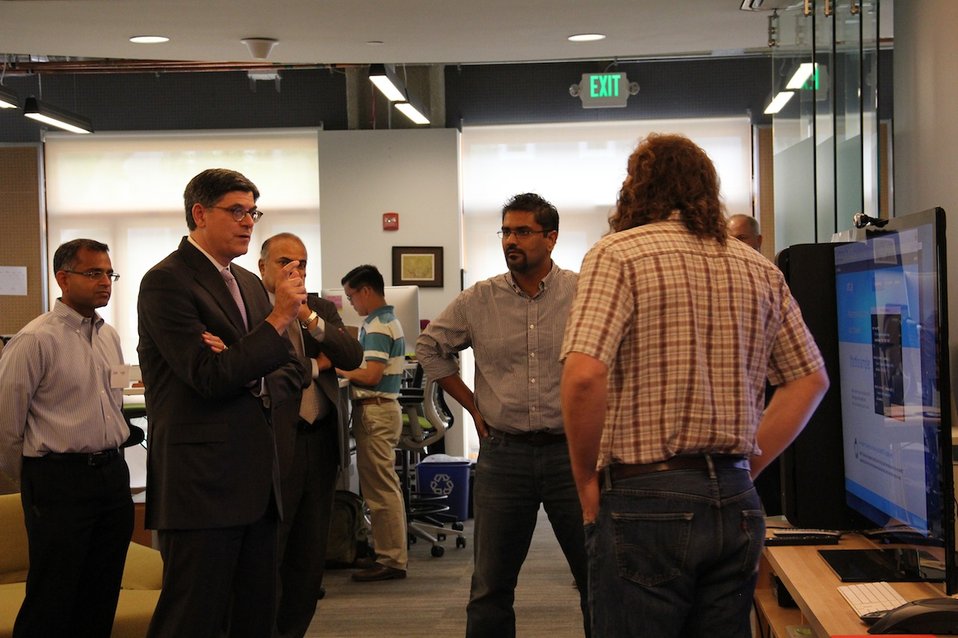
Secretary Lew visits innovation center

August 22, 2013 - Secretary Lew watched a demonstration during his visit to the AT&T Foundry in Palo Alto, CA.